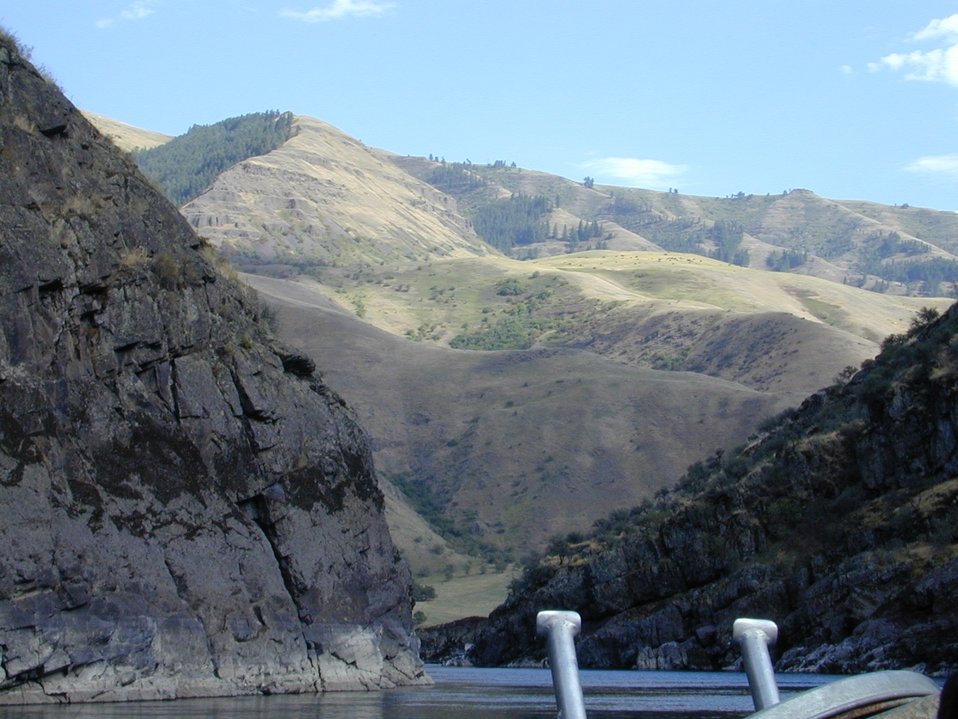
Recreation Rafting on Lower Salmon River Cottonwood Field Office UCSC Upper Columbia Salmon Clearwater District